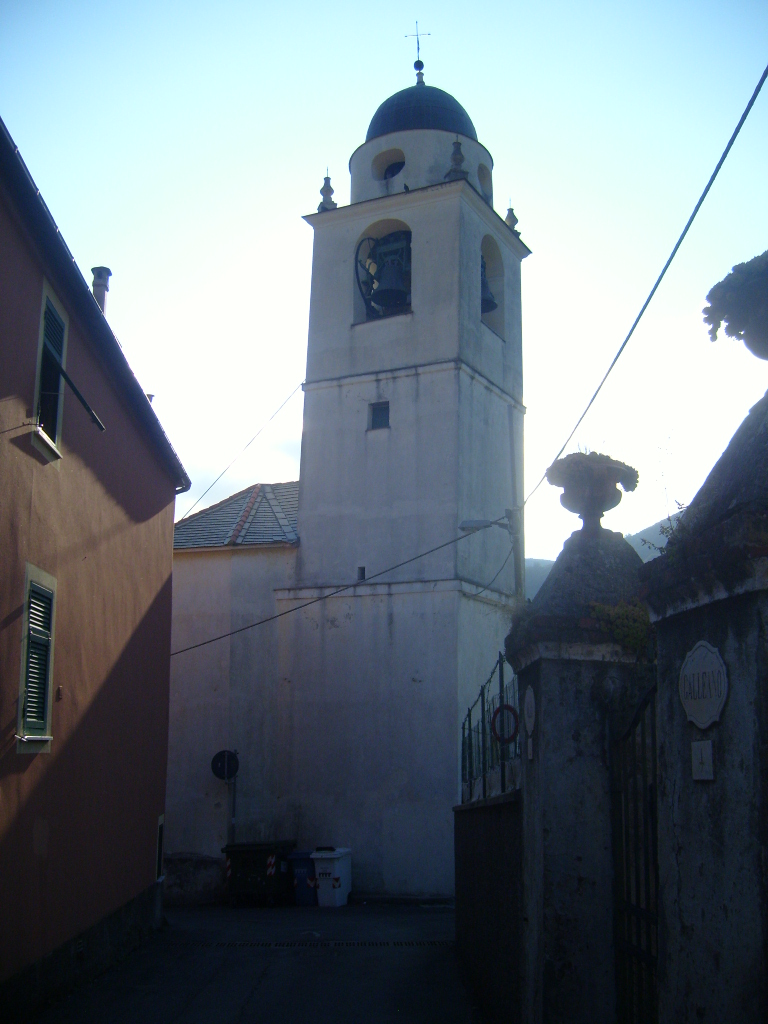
Italiano: Il Campanile della Chiesa di San Desiderio a Genova